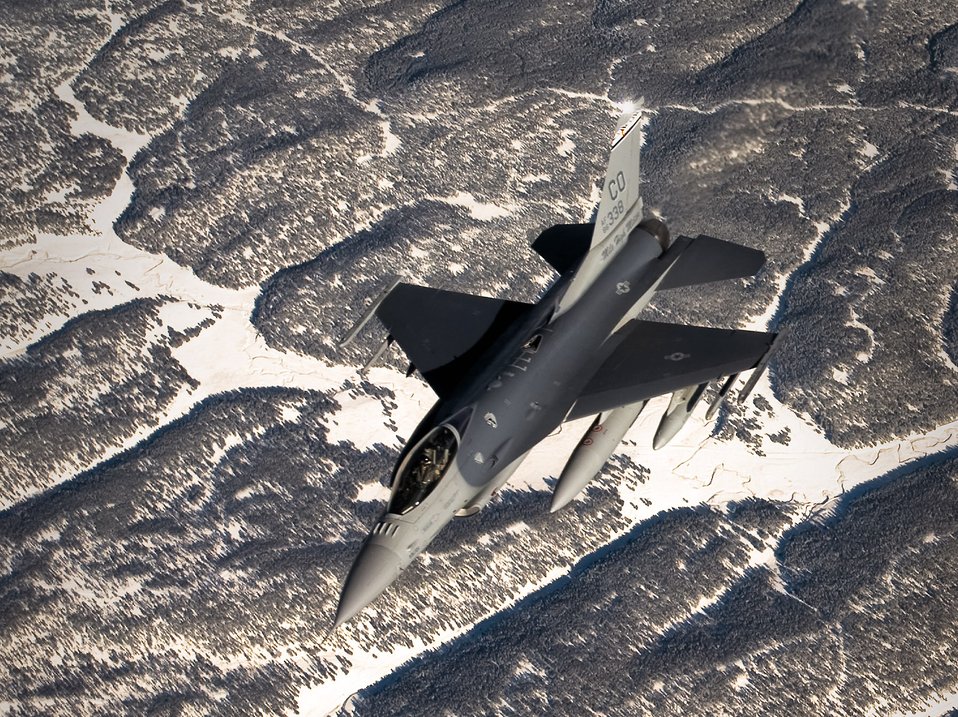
Dec. 18 airpower summary: F-16s protect coalition forces

An F-16 Fighting Falcon, like this one, performs close-air support and precision-guided munitions delivery for coalition forces patrolling in support of Operation Iraqi Freedom.